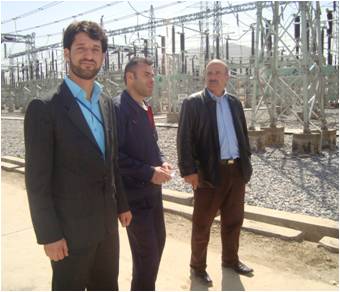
Opening the Lines of Communication

As more people in Afghanistan gain access to government-provided electricity, USAID is helping to create an effective and reliable electrical grid to deliver power. Electricity in Afghanistan is distributed by substations operated by Da Afghanistan Breshna Sherkat, the country’s electricity company. To regulate the voltage that flows through power lines, the substations need to communicate with each other regarding power flow and unexpected issues.
Before 2009, substations in the North East Power System communicated by using an assortment of unmatched radios and frequencies. This approach created many problems. Some of the substations are located at great distances from each other while mountains surround others hampering coverage. Electro-magnetic fields generated by the stations themselves also interfered with reliable communication.
To correct the situation, USAID’s Afghanistan Infrastructure Rehabilitation Program (AIRP) connected each substation to a system of telephones connected to small satellite dishes known as very small aperture terminals (VSATs). The network established reliable uninterrupted communications among the stations for the first time. Kabul’s Chimtala Substation, the newest and largest in Afghanistan, was already linked to the VSAT system when it came on line last year.
Ghulam Jailani is the manager of Chimtala and considers the VSAT network essential to the substation’s operations. He and his all-Afghan staff of 12 oversee the supply of 60 to 70 percent of the electricity in Kabul. “Without communications, we can’t do anything,” Mr. Jailani said. “If suddenly there is a shutdown somewhere, this is a very bad case.”
Presently, Chimtala is capable of generating 320 megawatts (MW) of power, and is expected to grow to 500 MW in a few years. Mr. Jailani believes that the station and its effective communications network is critical to the growth and development of Kabul.
Moe Aslam, the manager of the USAID/AIRP project to help centralize energy operations, agrees. “These and other improvements to power delivery will help bring Afghanistan up to date in the energy sector,” he said. “Our program will standardize the whole system.”